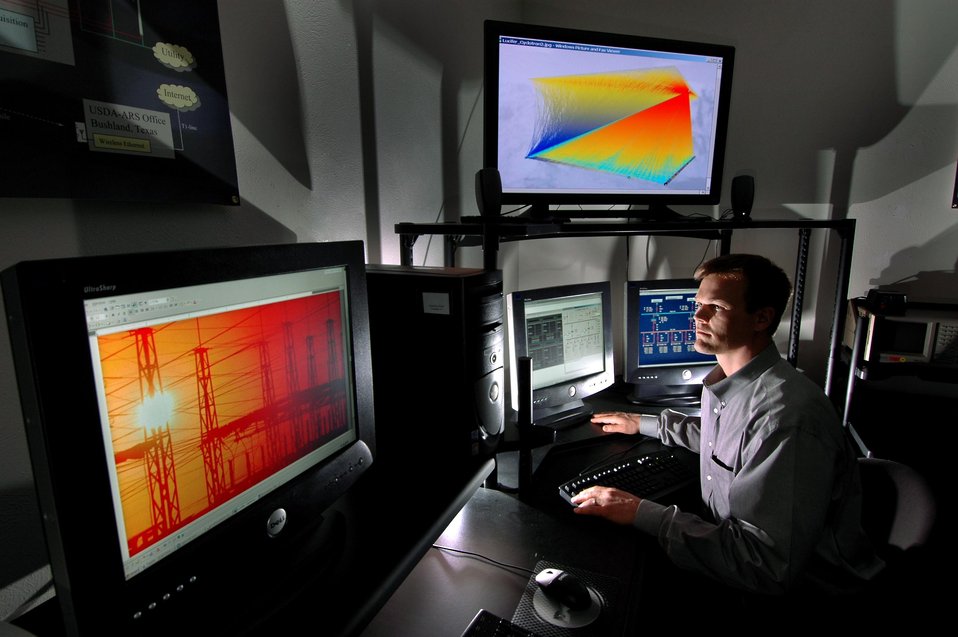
A TEAM OF INFRASTRUCTURE SECURITY EXPERTS IS DEVELOPING INTERNATIONAL STANDARDS FOR SECURITY OF CRITICAL INFRASTRUCTURES.

THE DEVELOPMENT OF ENERGY SECURITY IMPROVEMENT IN CRITICAL INFRASTRUCTURE SYSTEMS IS BEING LED BY FOUR DOE NATIONAL LABORATORIES, SANDIA, PACIFIC NORTHWEST, ARGONNE, AND IDAHO NATIONAL ENGINEERING AND ENVIRONMENTAL LABORATORIES. THE TEAM IS WORKING TO DETER TERRORIST ACTS ON SUPPLIES OF ELECTRIC POWER, OIL, GAS AND WATER.